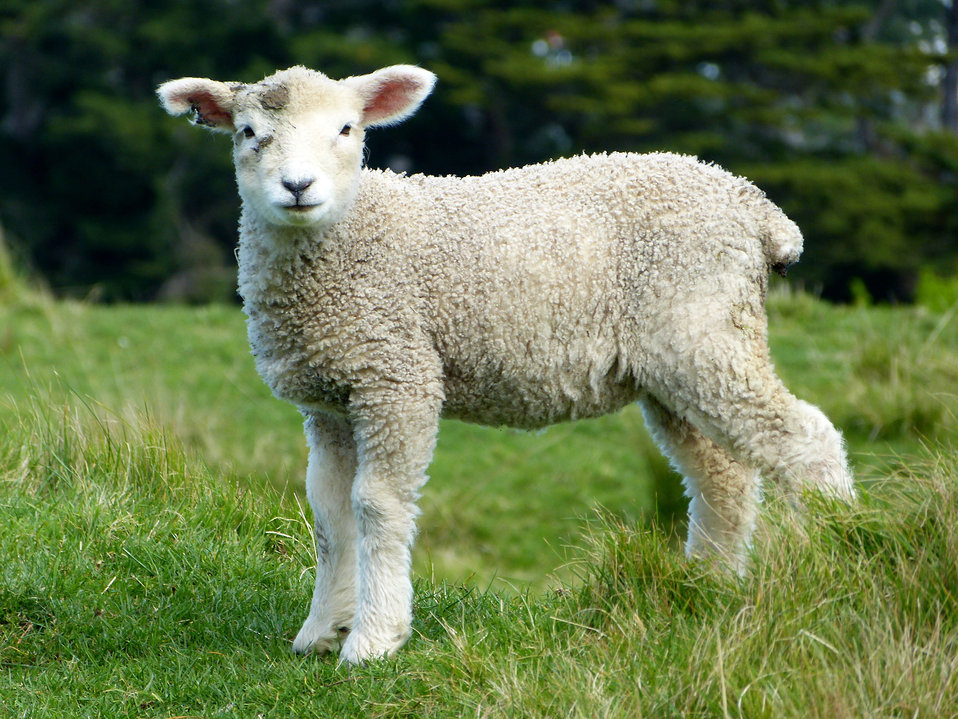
Baby sheep in new zealand.